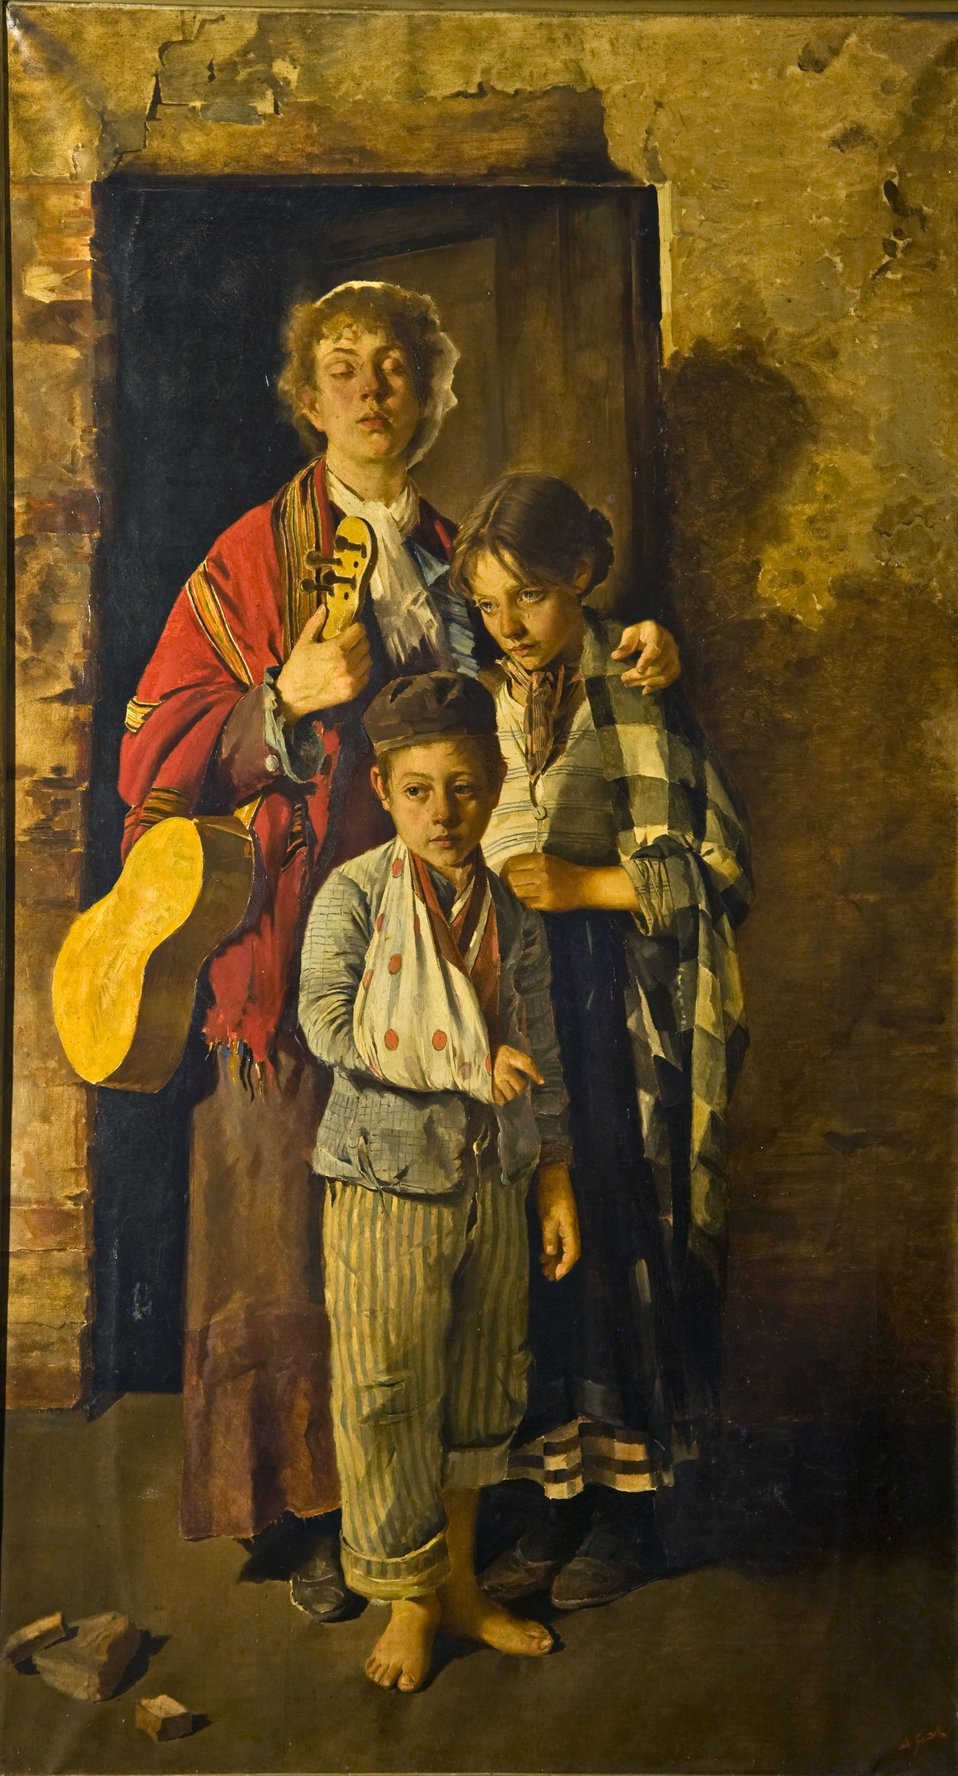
A gandolfo musica forzata